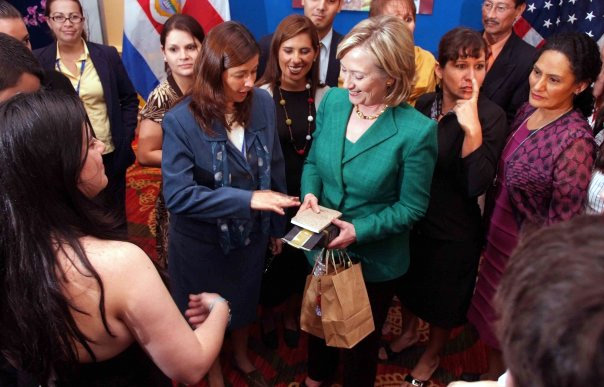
Secretary Clinton With Women Entrepreneurs

U.S. Secretary of State Hillary Rodham Clinton speaks with Women Entrepreneurs at the Pathways to Prosperity Conference in San José, Costa Rica, March 4, 2010.